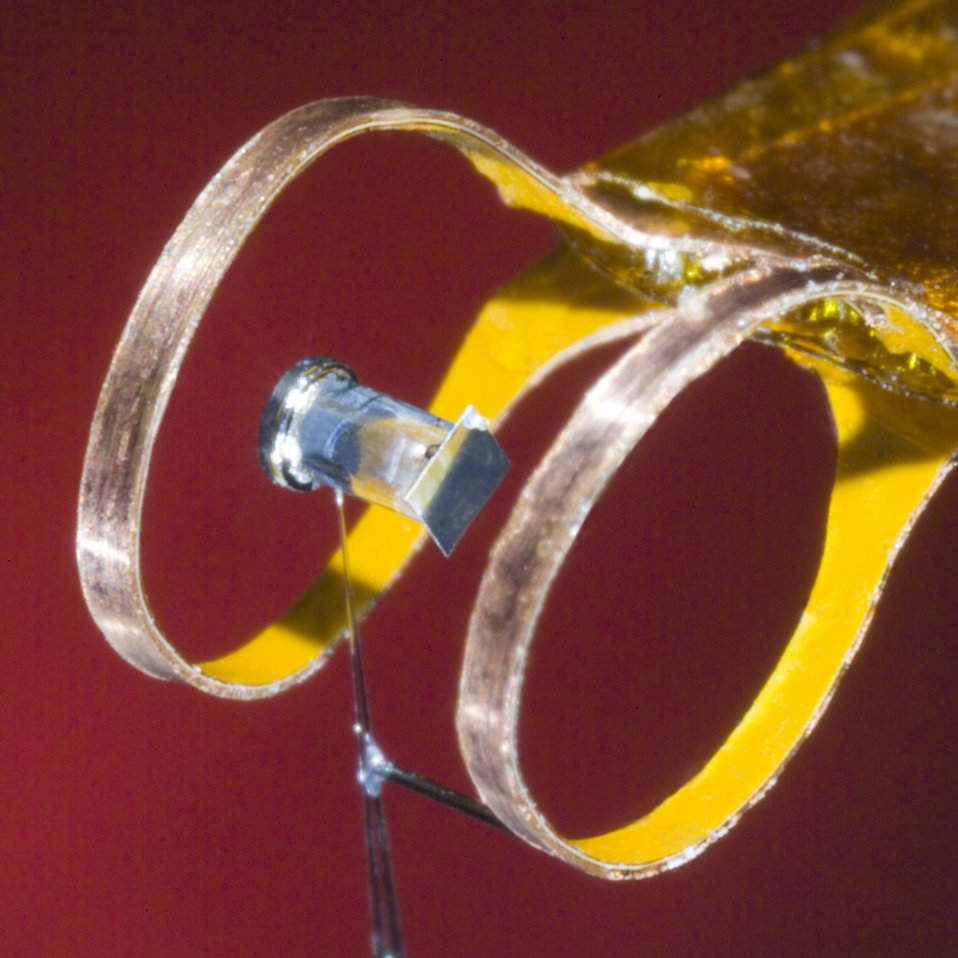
The Magneto-Inertial Fusion Energy Delivery System (MIFEDS) target assembly is used on Omega to test the concept of magnetic thermal insulation of the spot in a capsule implosion.